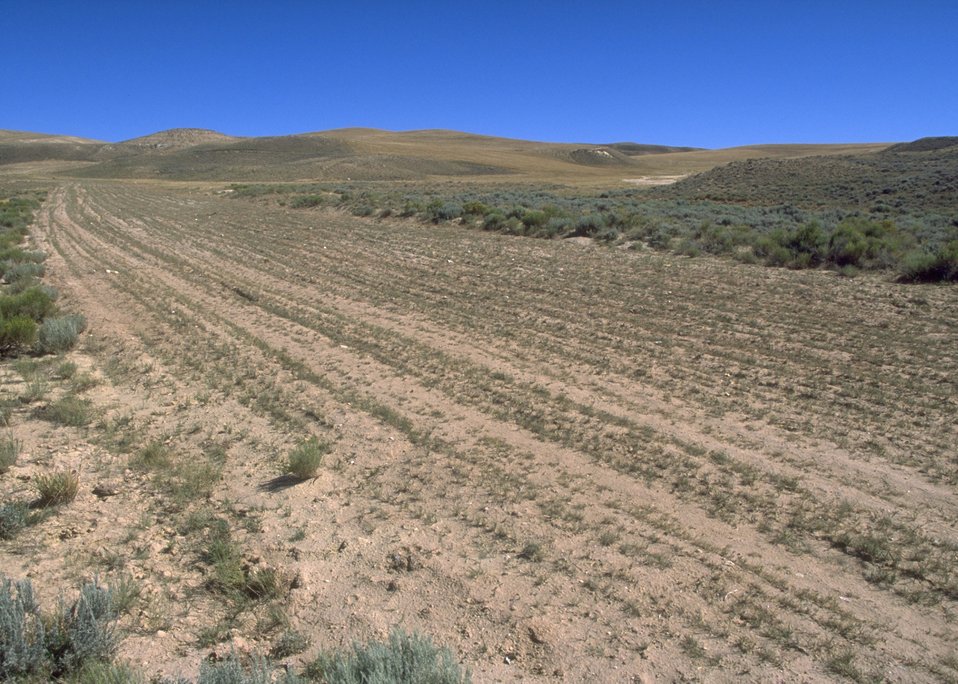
Gas Hill Abandoned Mine Lands in various stages of rehabilitation, Lander Field Office.